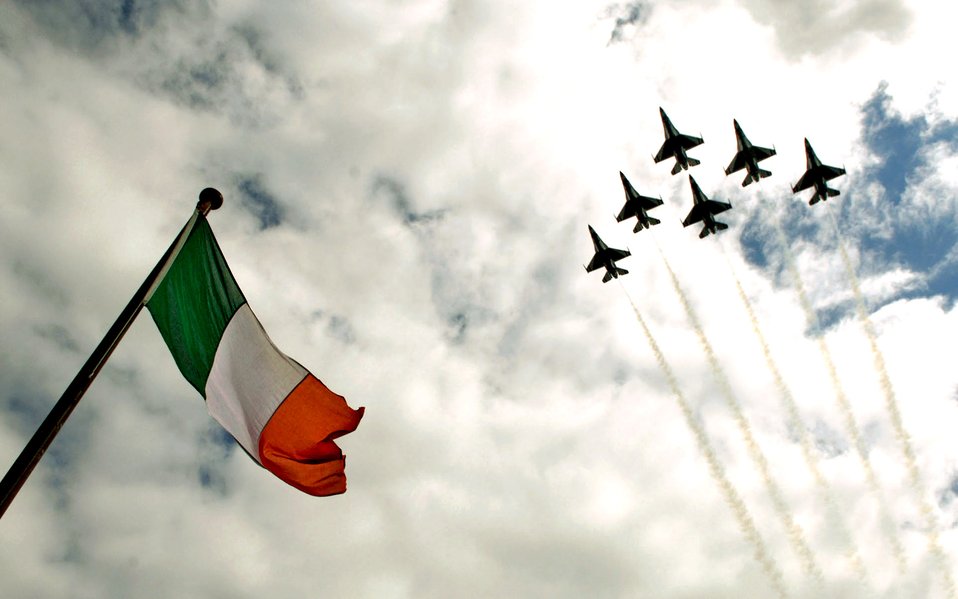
Thunderbirds begin European good-will tour

The Air Force Thunderbirds perform their delta formation over the Salthill Air Show in Galway, Ireland, June 22. This is the first time in the Thunderbirds have performed over Irish soil.